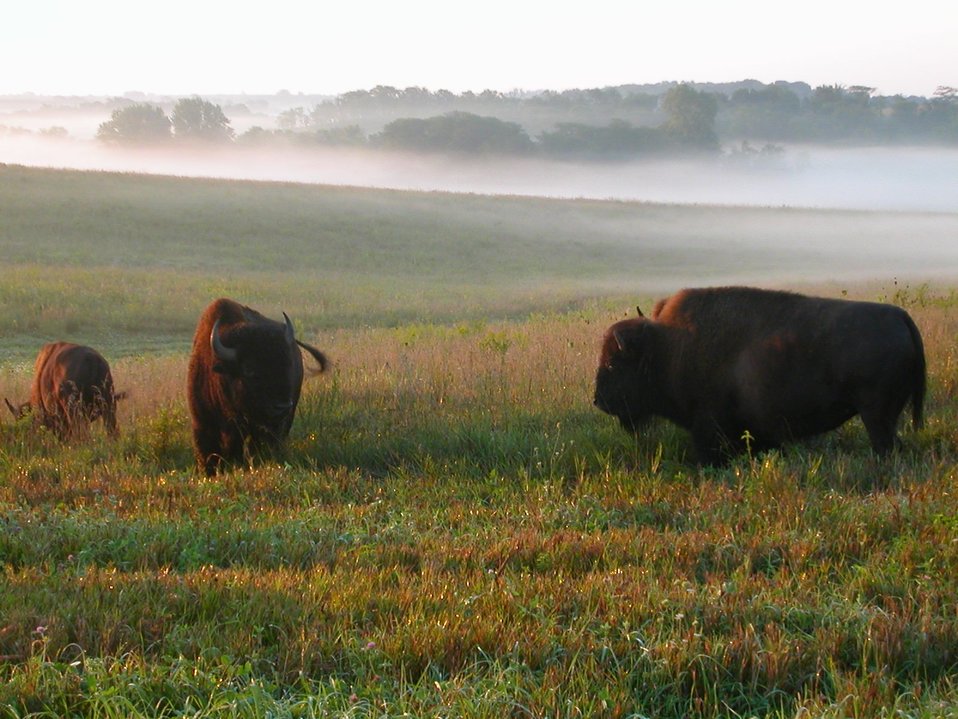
bison on Neal Smith Refuge

Bison graze on the prairie at Neal Smith National Wildlife Refuge in Iowa.